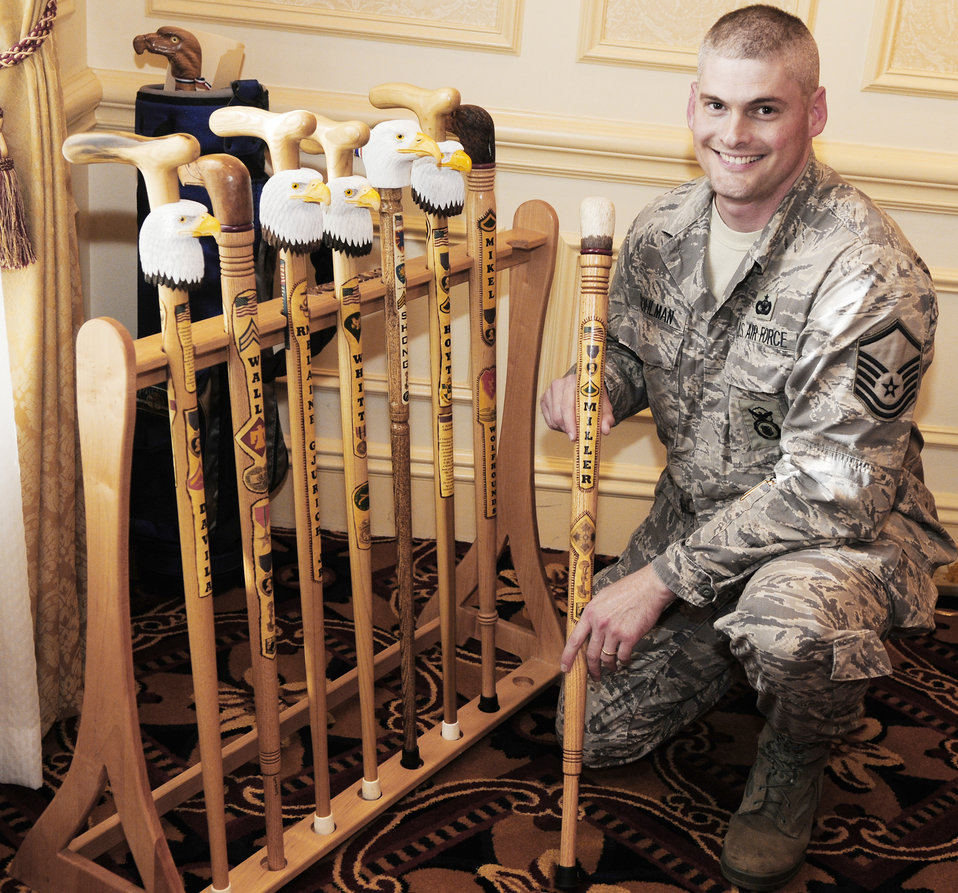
Woodcarvers give veterans support through Eagle Cane Project

Master Sgt. Bruce Stohlman Jr. shows several finished eagle head canes Oct. 7, 2009, at the Walter Reed Medical Center in Washington, D.C. Sergeant Stohlman volunteers his woodworking skills hand-carving canes for wounded veterans with the Northern Virginia Woodcarvers as part of the Eagle Cane Project. The Eagle Cane Project is an off-shoot of Soldiers' Angels, a nonprofit organization providing aid and comfort to United States servicemembers and their families. Sergeant Stohlman is the Bolling Air Force Base Joint Visitors' Center superintendent in Washington, D.C.